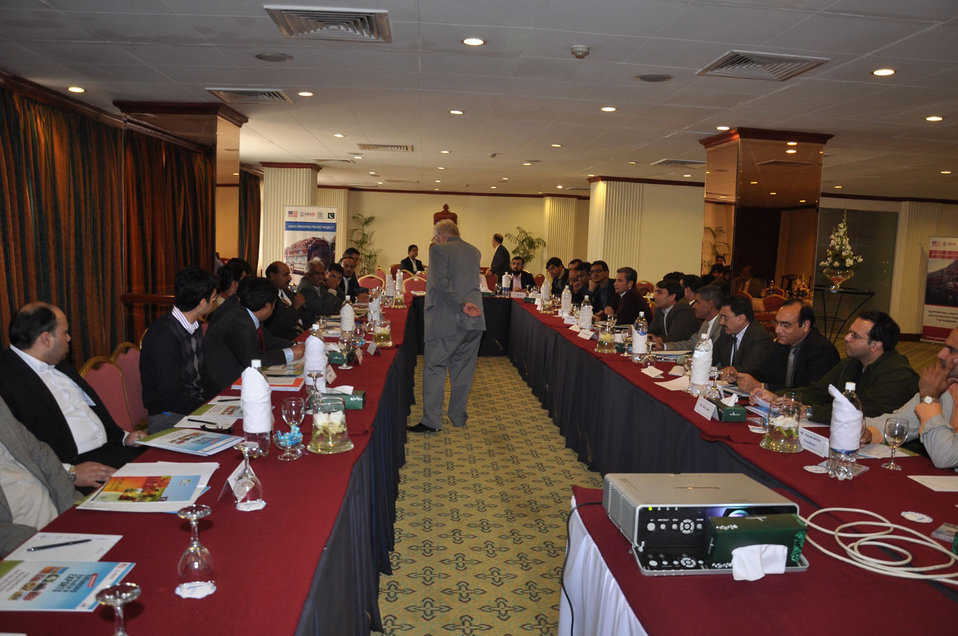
Participants and trainer of the AG workshop organized by USAID Trade Project.